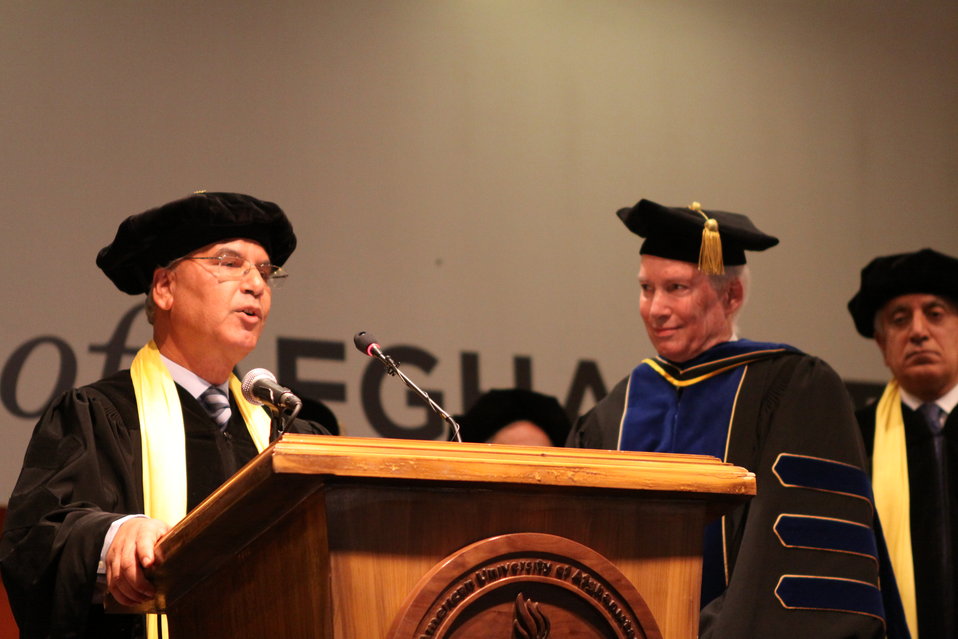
100526 AUAF Graduation 173